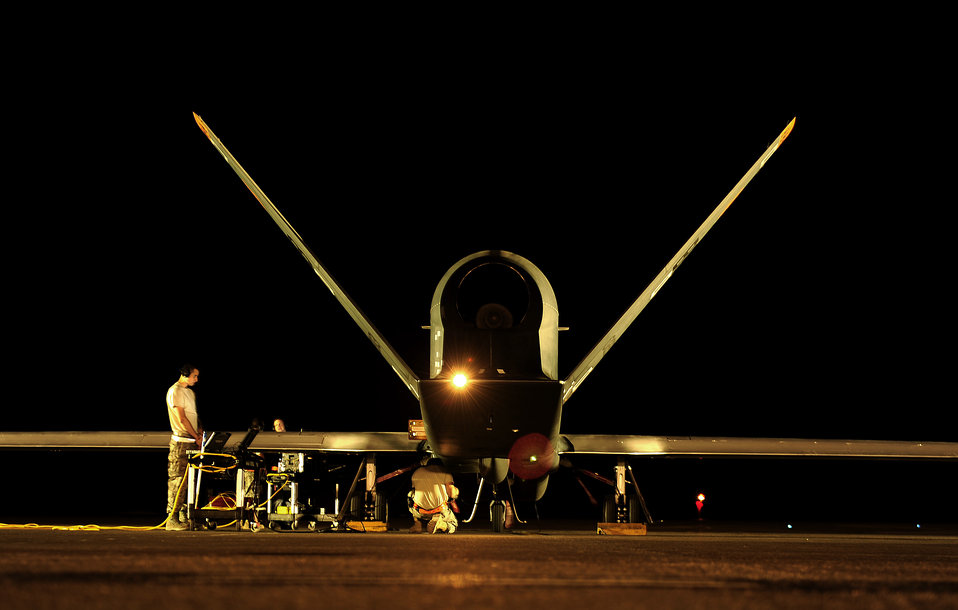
Global Hawk prepares for flying mission

An RQ-4 Global Hawk gets all pre-flight checks accomplished from maintenance technicians before a mission while deployed Nov. 23, 2010, at an air base in Southwest Asia. The Airmen and the RQ-4 are assigned to the 380th Expeditionary Operations Group.